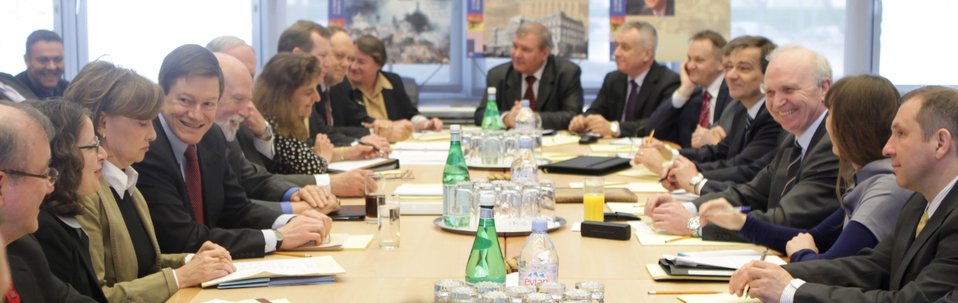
U.S., Russian Delegations Meet at Bilateral Consultative Commission on New START Treaty

The U.S. delegation, left, meets with the Russian delegation, right, at the Bilateral Consultative Commission on the New START Treaty, in U.S. Mission at Geneva, Switzerland, on March 28, 2011.